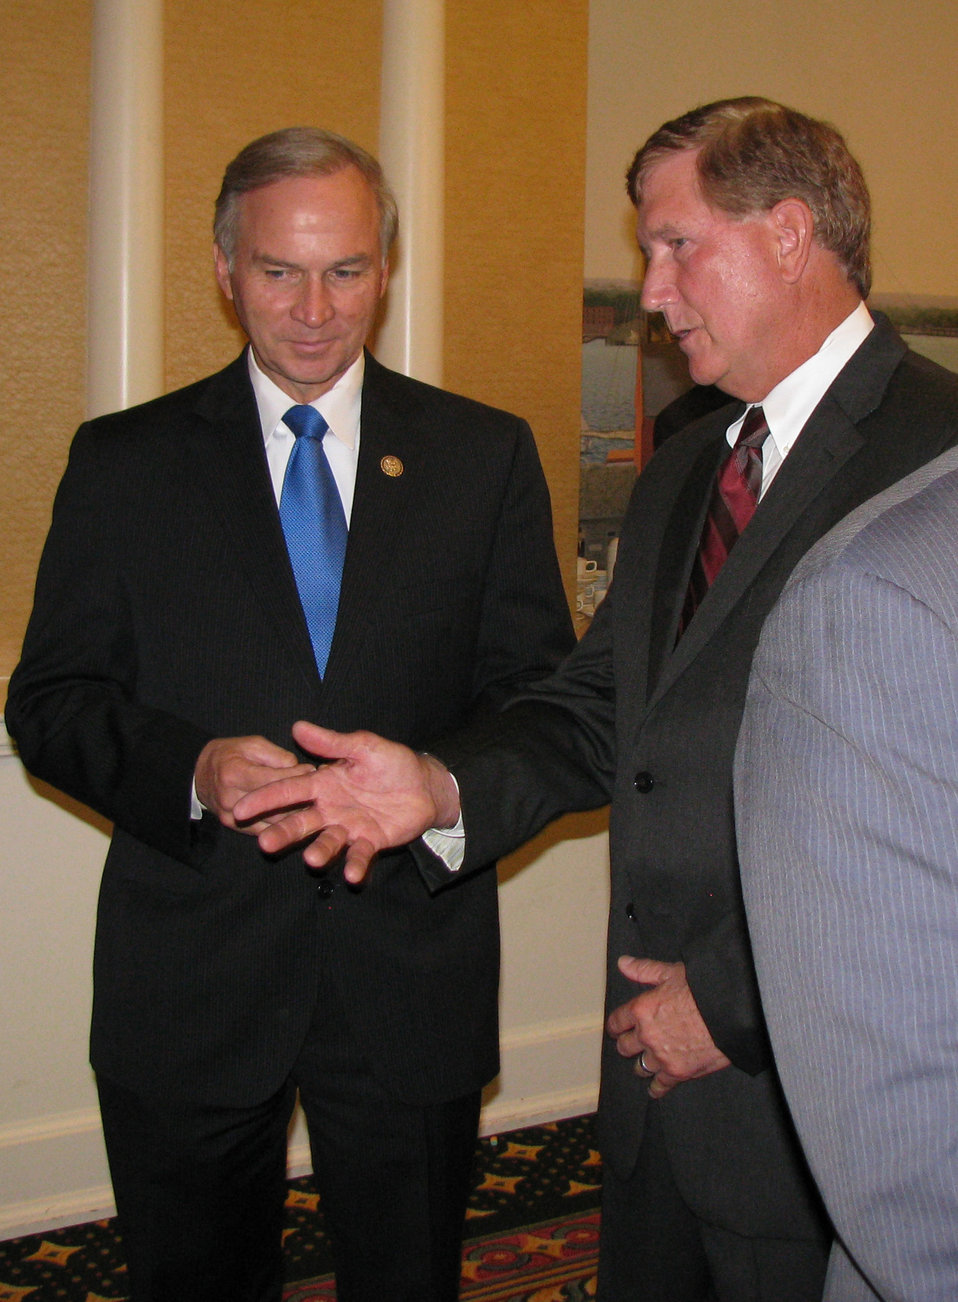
Partnering is vital to Air Force and communities

Terry Yonkers (right), the assistant secretary of Air Force for installations, environment and logistics, talks with Virginia Congressman Randy Forbes July 19, 2011, at the Association of Defense Communities annual conference in Norfolk, Va. Air Force officials participate in this event, underscoring the commitment to local communities with active and closed military installations.